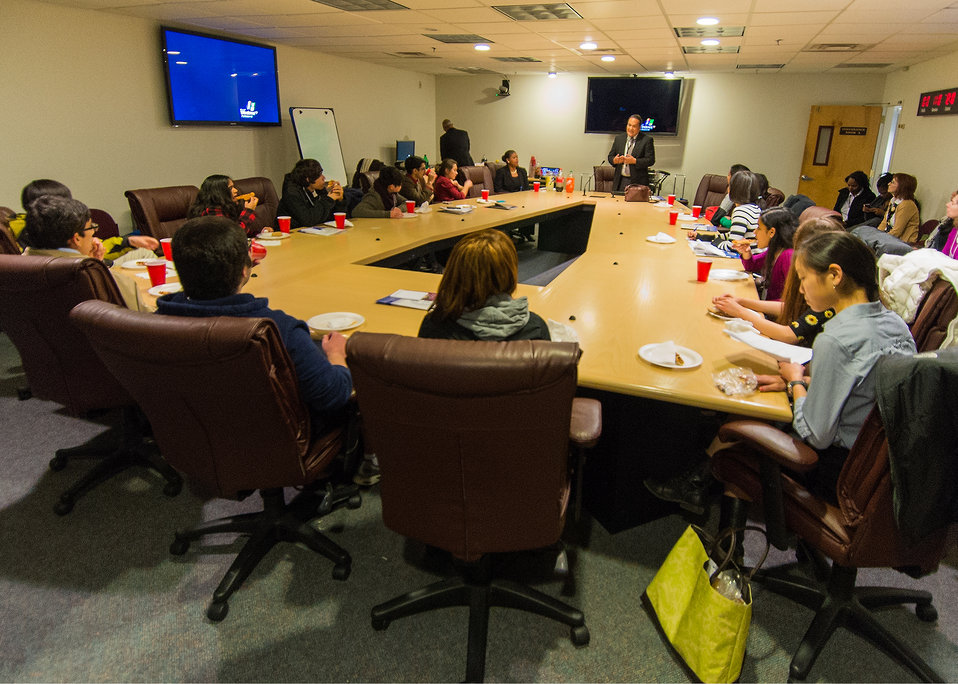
Lawrence Shorty, Director 1994 Programs Tribal Land Grant Colleges and Universities program explained to students from Thomas Jefferson High School of Science and Technology in Alexandria, VA. how to apply for student employment programs at the U.S. Department of Agriculture (USDA), Office of the Chief Information Officer (OCIO) IT Job Shadow Day, Tuesday, Mar. 25, 2014. The OCIO IT Job Shadow Day hosts students from local high schools in the Washington, D.C. area annually with IT professionals and agricultural specialists from a variety of mission areas at USDA.